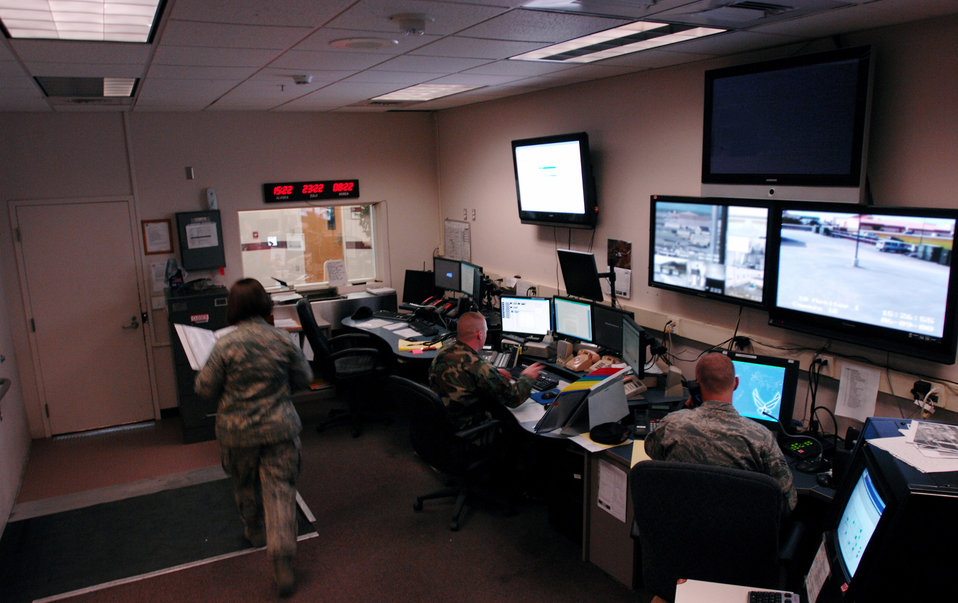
Special Emergency Response

Members of the 354th Security Forces Squadron at Eielson Air Force Base, Alaska, use mutiple resources to watch the base, including well placed cameras and monitoring stations. The base receives more than 3,000 U.S military and international visitors during the multiple RED-FLAG Alaska exercises each summer.